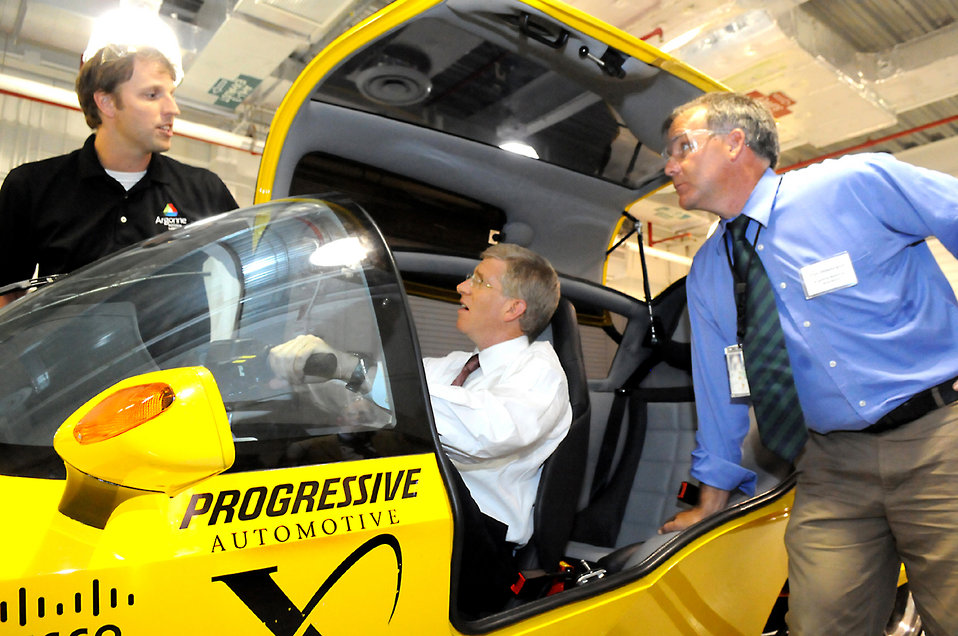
DEPUTY SECRETARY PONEMAN TRIES OUT A FINALIST FOR THE PROGRESSIVE AUTOMOTIVE X PRIZE AT ARGONNE NATIONAL LABORATORY.

Shown are Argonne engineer Mike Duoba and DOn Hillebrand with the Deputy Secretary.